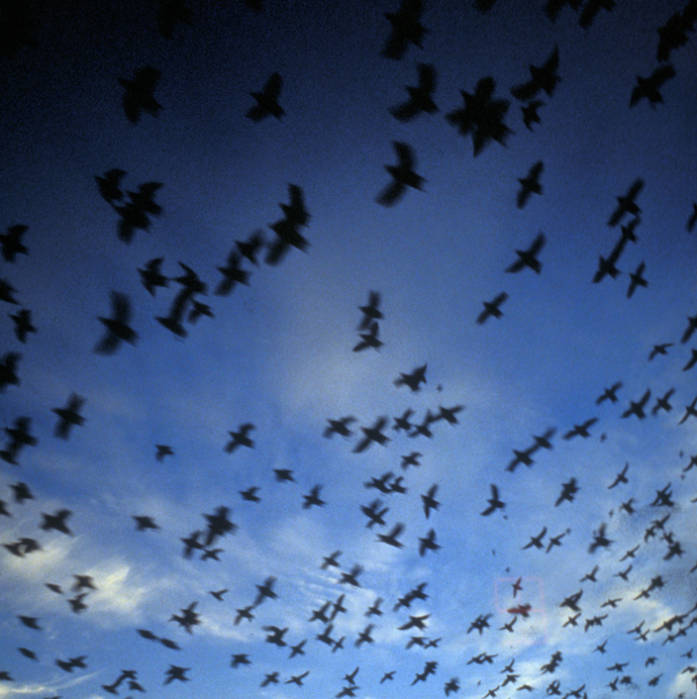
St. George Island birds

Alaska Maritime National Wildlife Refuge